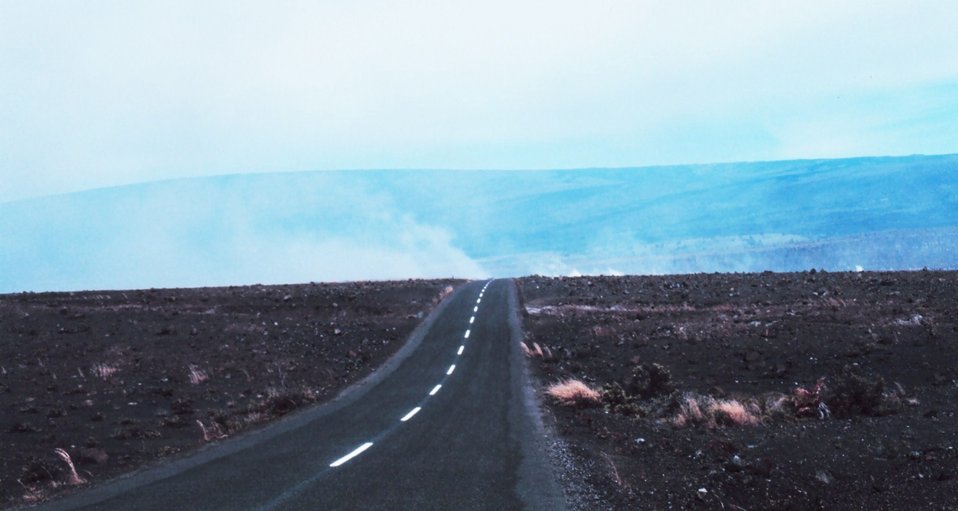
Volcanoes National Park approaching Kilauea Crater